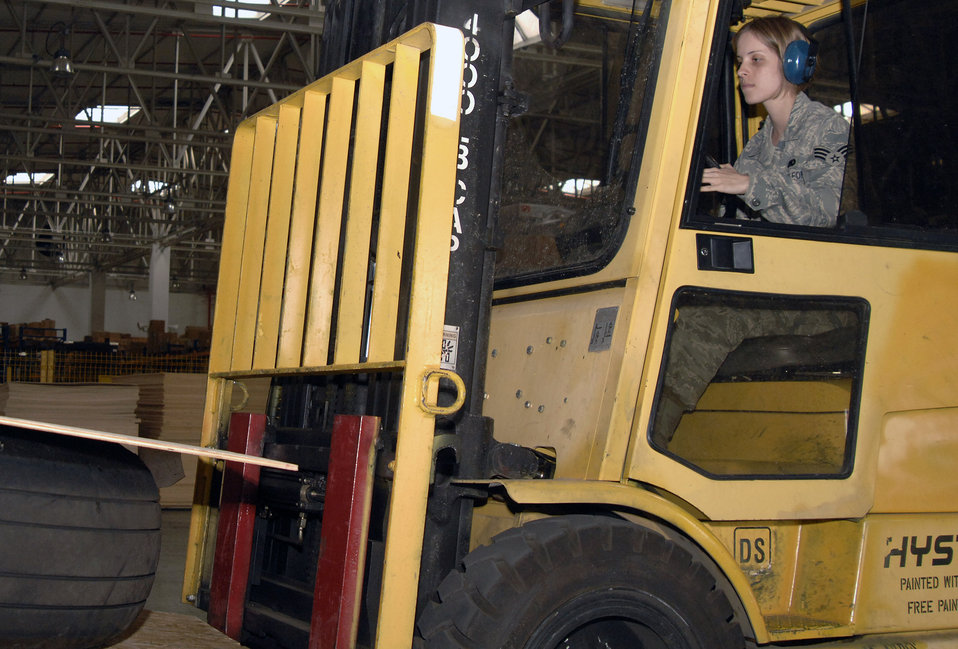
Incirlik celebrates Women's History Month

Senior Airman Sandra Sandoval operates a 4,000-pound forklift March 9 in a warehouse at Incirlik Air Base, Turkey. Airman Sandoval assists in the management of $4.9 million in war reserve material, support agreement reimbursements of $2.3 million, a 21,070 line item stock record account, 7.9 million gallons of fuel storage and 928 vehicles. Airman Sandoval is assigned to the 39th Logistics Readiness Squadron.